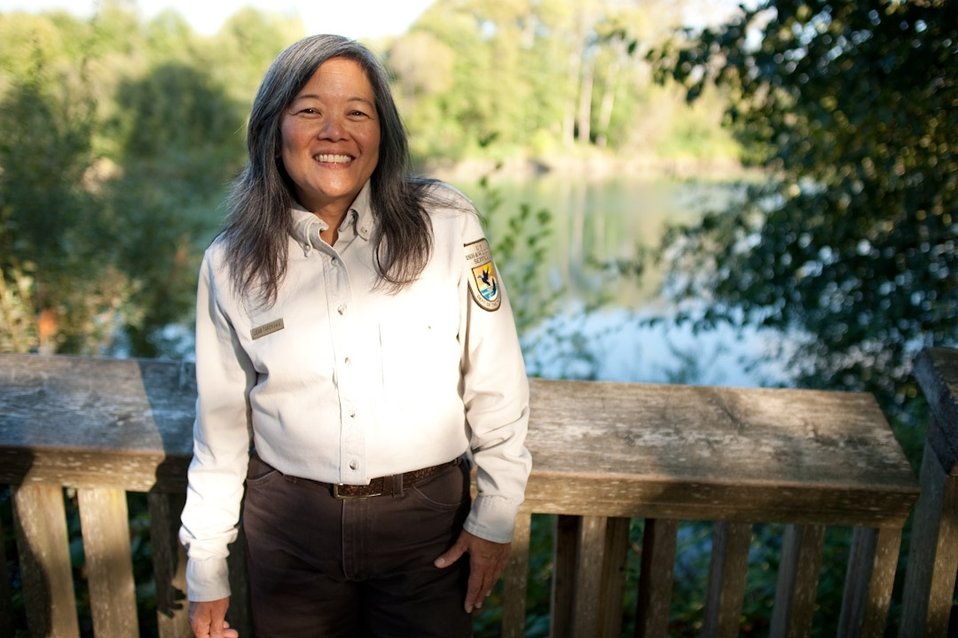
Jean Takekawa, refuge manager at Nisqually National Wildlife Refuge in Washington